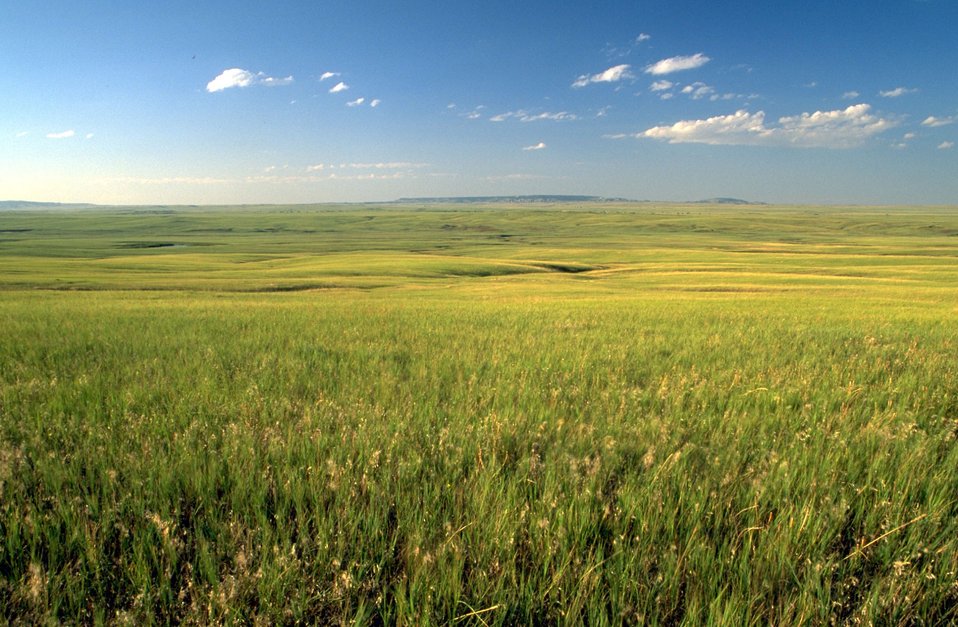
Grassland Vista